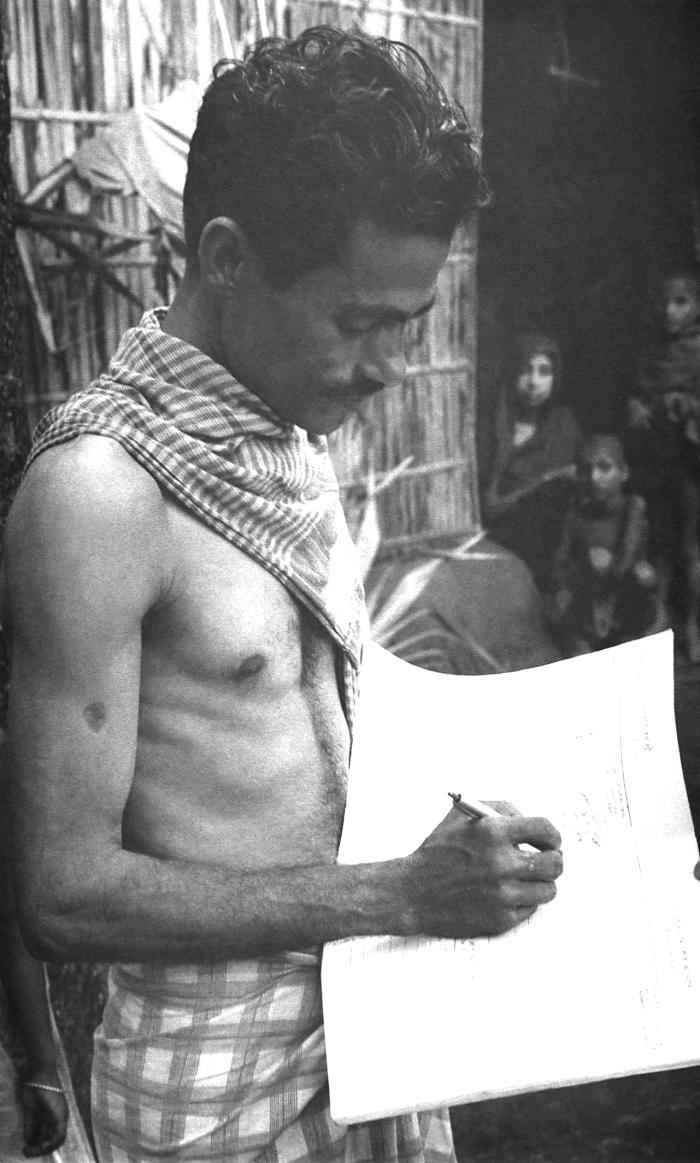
This 1975 image depicted a local Bangladesh man who was working as a smallpox eradication campaign volunteer, and showed the man entering data into the smallpox containment register. The data had been acquired during his house to house investigation in search of the existence of any possible smallpox cases. Note the smallpox vaccination scar on his right upper arm.